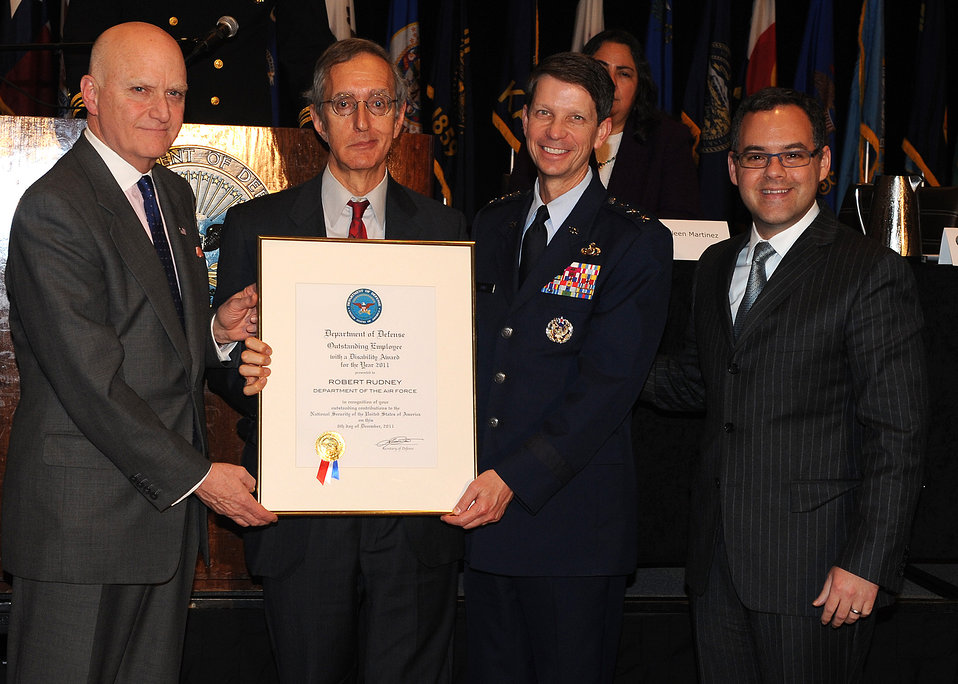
Three Air Force members honored at DOD disability awards ceremony

Dr. Robert Rudney receives his Department of Defense Outstanding Employee with a Disability award Dec. 6, 2011, from John R. Campbell, Lt. Gen. Darrell Jones and Daniel Ginsberg during the 31st Annual DOD Disability Awards ceremony at the Hyatt Regency Hotel in Bethesda, Md. The award highlights the valuable contributions to national security made by individuals with disabilities. Rudney is the senior adviser and learning integration research liaison, Campell is the Deputy Assistant Secretary of Defense for Wounded Warrior Care and Transition Policy, Jones is the Air Force deputy chief of staff for manpower, personnel and services and Ginsberg is the Air Force assistant secretary for manpower and reserve affairs.